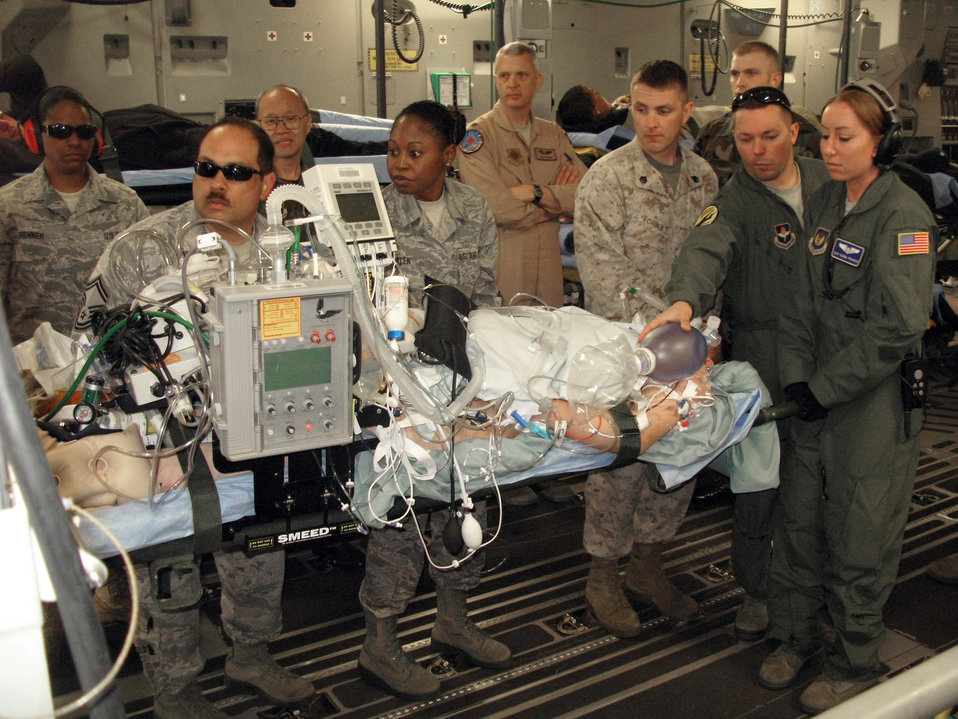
AE Afghanistan

Aeromedical evacuation team members and volunteers at Ramstein Air Base, Germany, position a critically wounded warrior for a flight April 29, 2011, aboard a C-17 Globemaster III to Joint Base Andrews, Md.